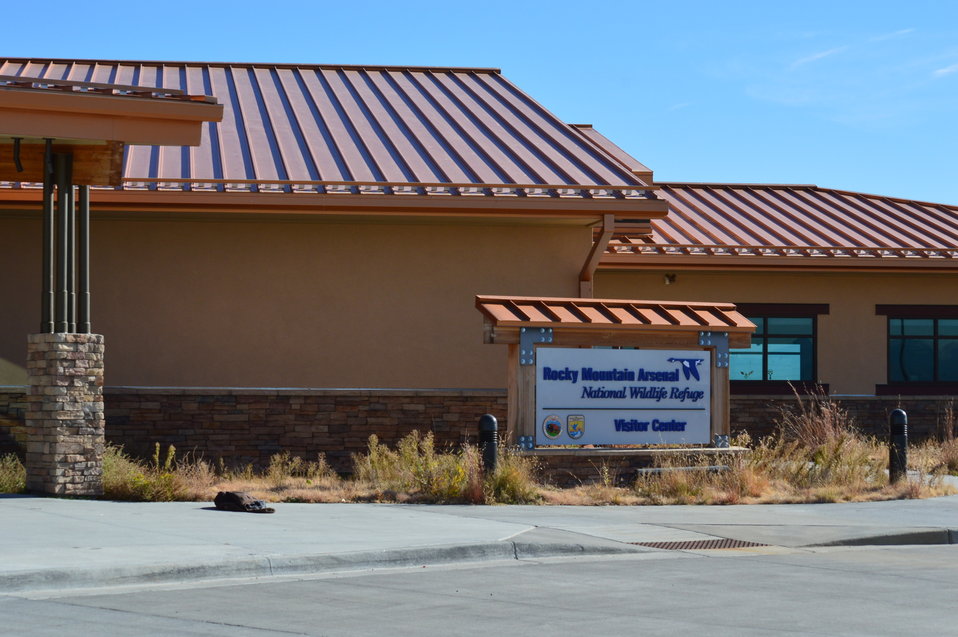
Rocky Mountain Arsenal where the Ivory Crush event is being held.